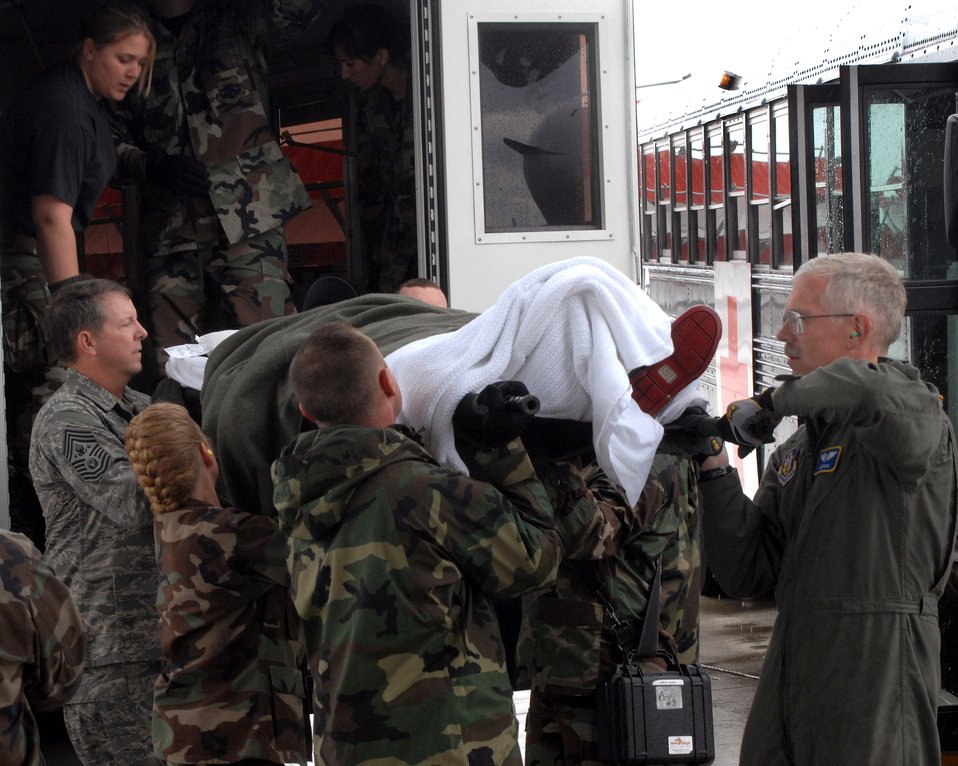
CMSAF assists with aeromedical evacuation

Chief Master Sgt. of the Air Force Rodney J. McKinley and members of the 435th Aerospace Medicine Squadron help load a patient going onto an aeromedical evacuation flight July 10 at Ramstein Air Base, Germany. Chief McKinley followed patients through Landstuhl Regional Medical Center to the Contingency Areomedical Staging Facility and finally on the flight back to the states.